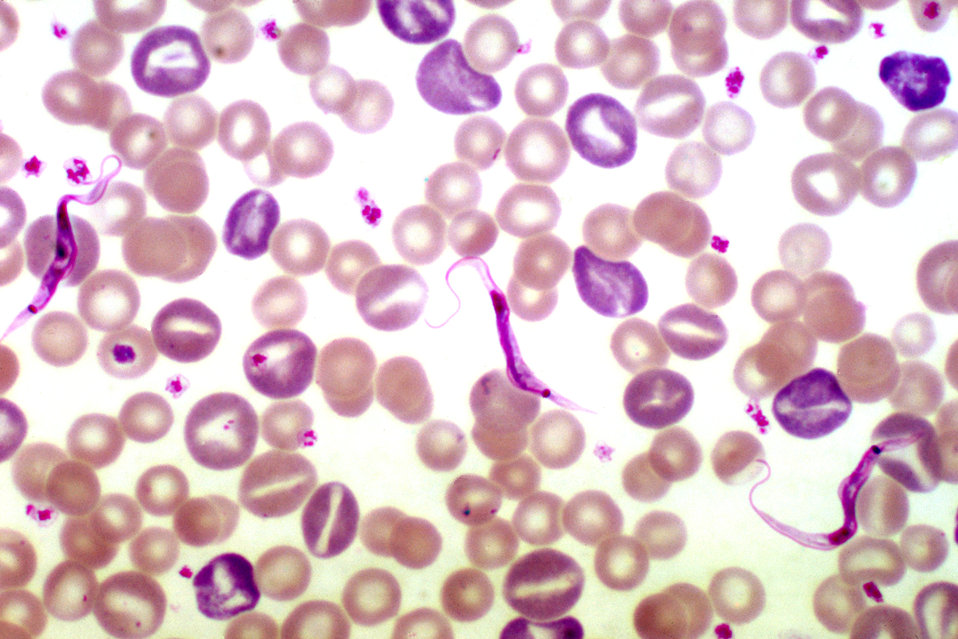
A photomicrograph of a rat blood smear revealing Trypanosoma lewisi parasites, using a Giemsa stain technique.